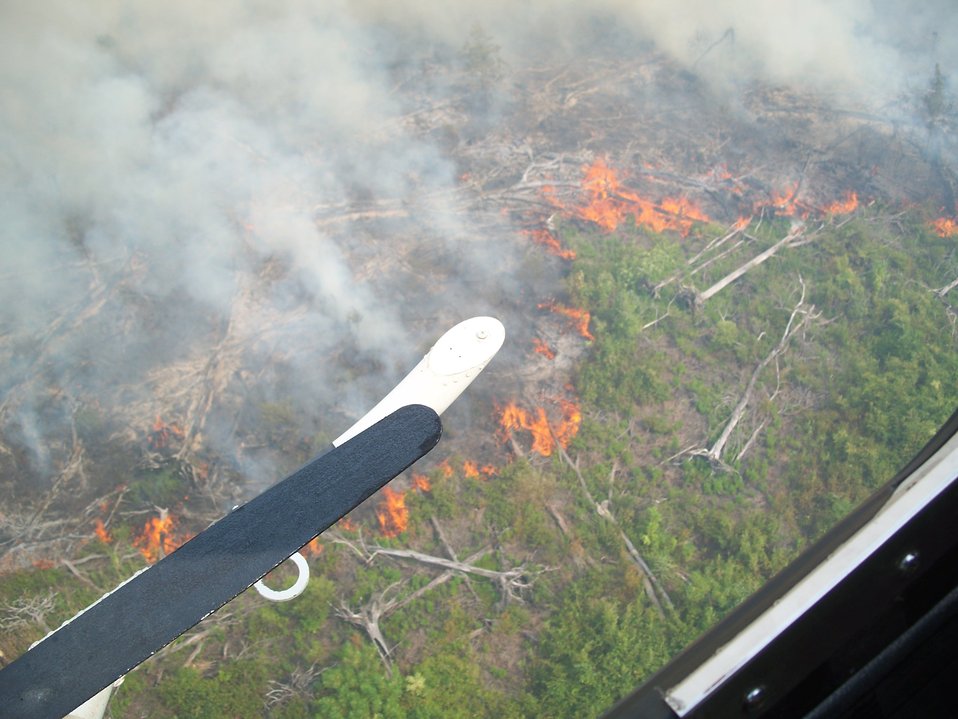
Flames at Lateral West Fire

Suffolk, VA August 2011: The Lateral West wildfire burns on Great Dismal Swamp National Wildlife Refuge. The fire was started by lighting and quickly consumed dead and down material from the 2008 South One Fire.